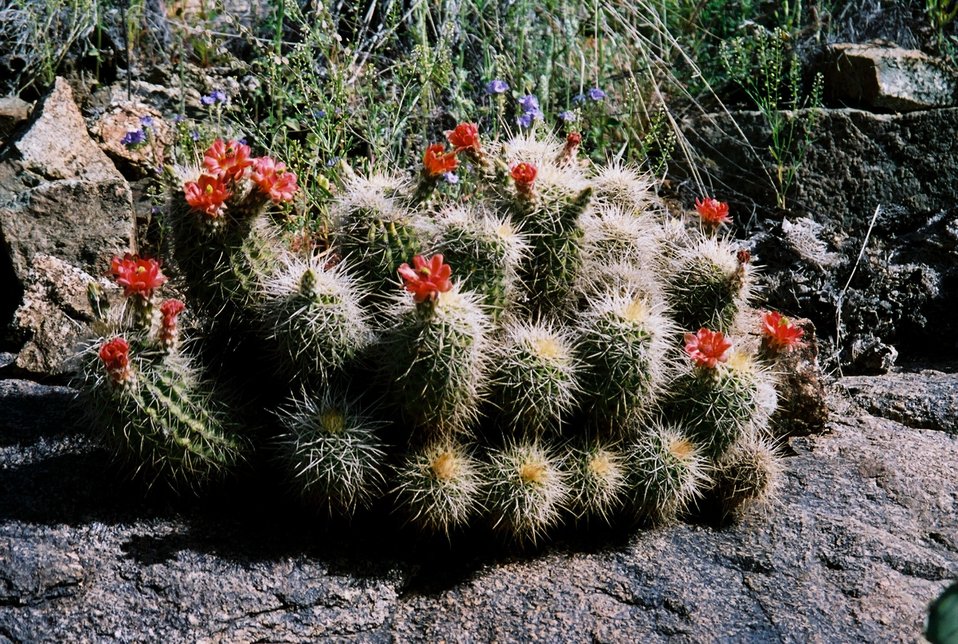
Cholla in bloom in the Agua Fria National Monument.